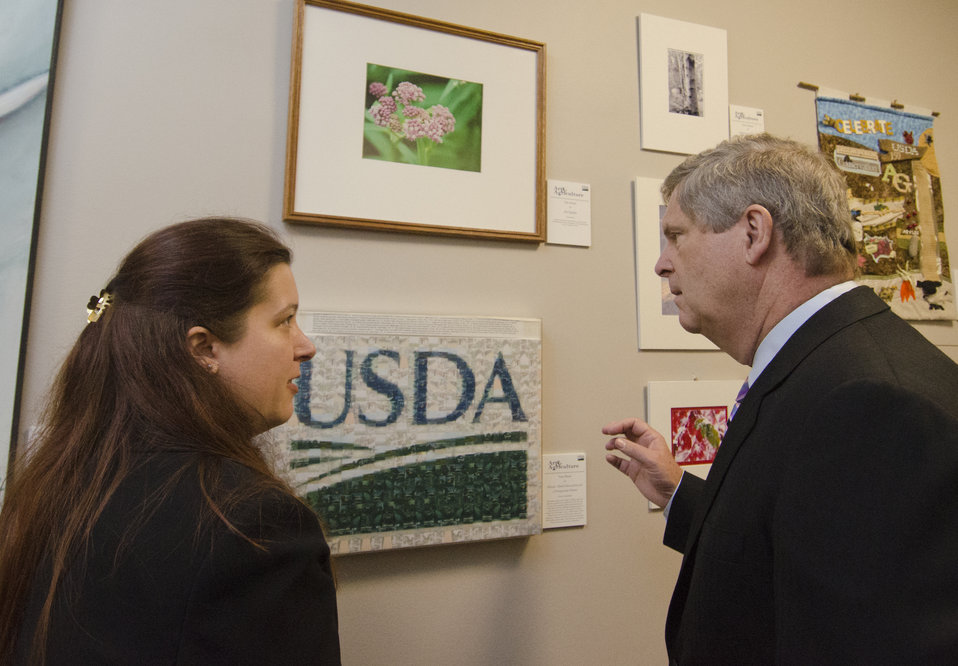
Agriculture Secretary Tom Vilsack visits the gallery of winning entries and talks with Traci Mouw at the Art and Agriculture competition in the South Building, Washington, D.C on Thursday, May 31, 2012. U.S. Department of Agriculture (USDA) full-time and part-time employees submitted art based on ten agricultural themes. The event was part of USDA's 150th Anniversary celebration and the winning artwork is on display from May 15 through December 31, 2012. Artistic expression is a creative outlet that is vital for an individual to grow and develop in their environment.